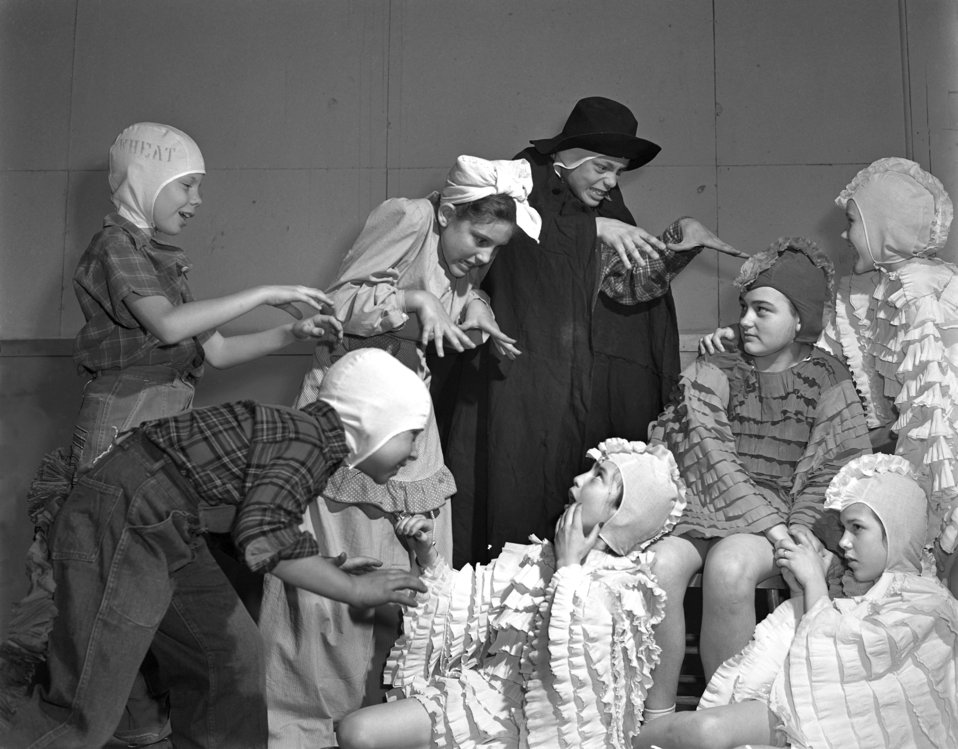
Play 'Little Red Hen' Oak Ridge 1947

3429-3 DOE photo Ed Westcott 4-1947 Sally Brown, Janice Vawter, Sandra Jamison, Jack Harris, Billy Doggett, Tonya Kuperstock, Bob Green, Libby Bond Oak Ridge Tennessee